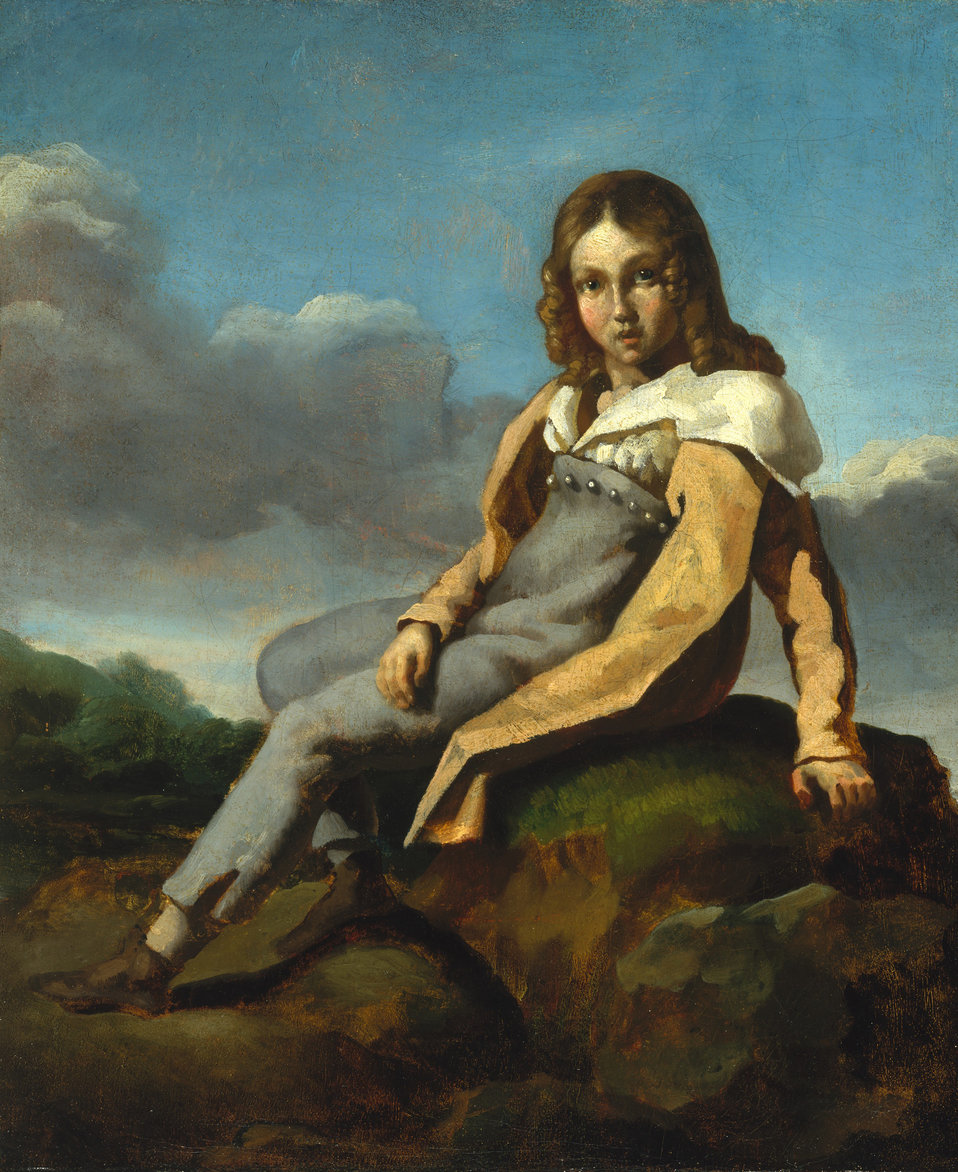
Alfred de Dreux